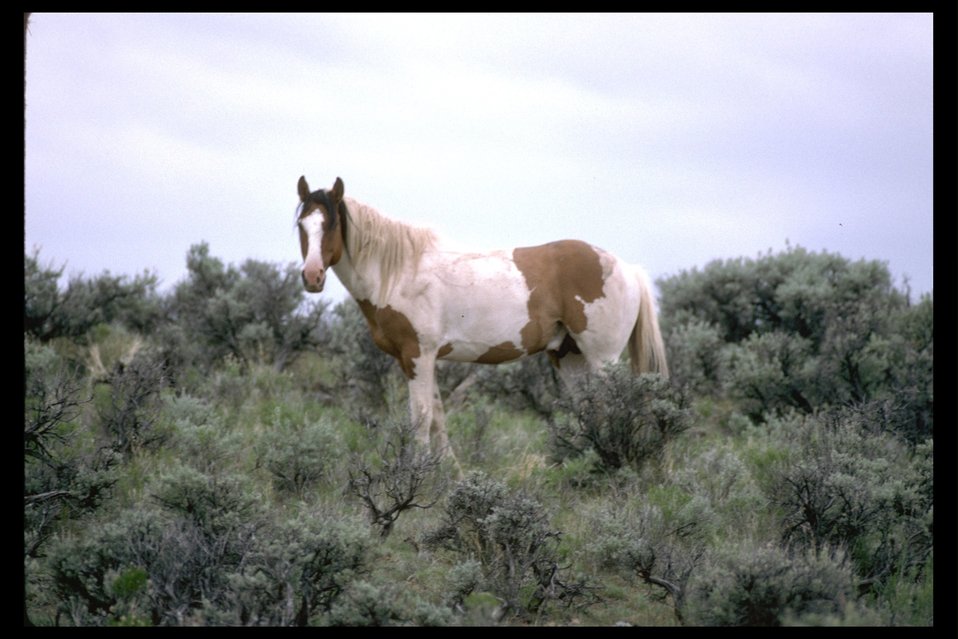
South Steens Pintos on the rangeland of South Steens HMA.